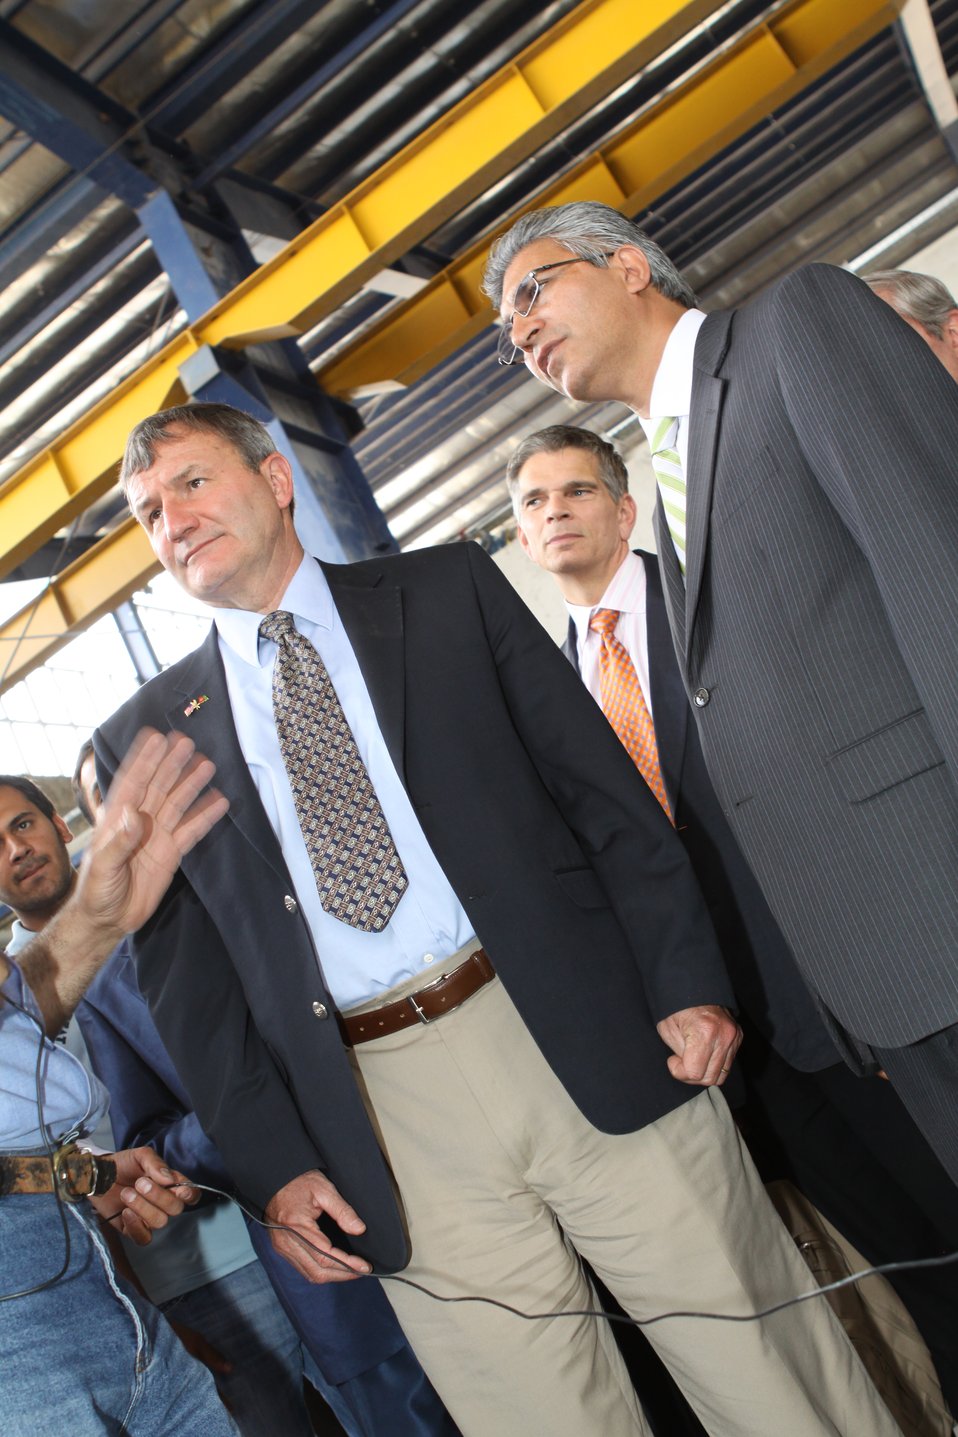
100525 Hirat Marble Conference 442